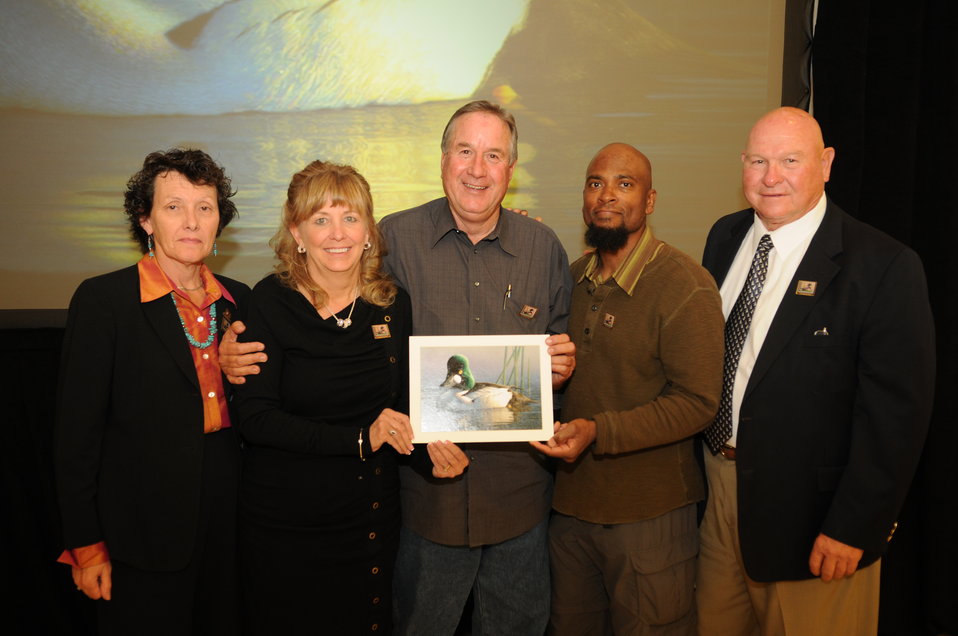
Everyone Loves a Winner

The U.S. Fish & Wildlife Service sponsored the 2012 Federal Duck Stamp Art Contest September 28 and 29 in Ogden, Utah, at Weber State University. A panel of five judges was responsible for choosing the art work used to design the 2013-2014 Migratory Bird Hunting and Conservation Stamp.